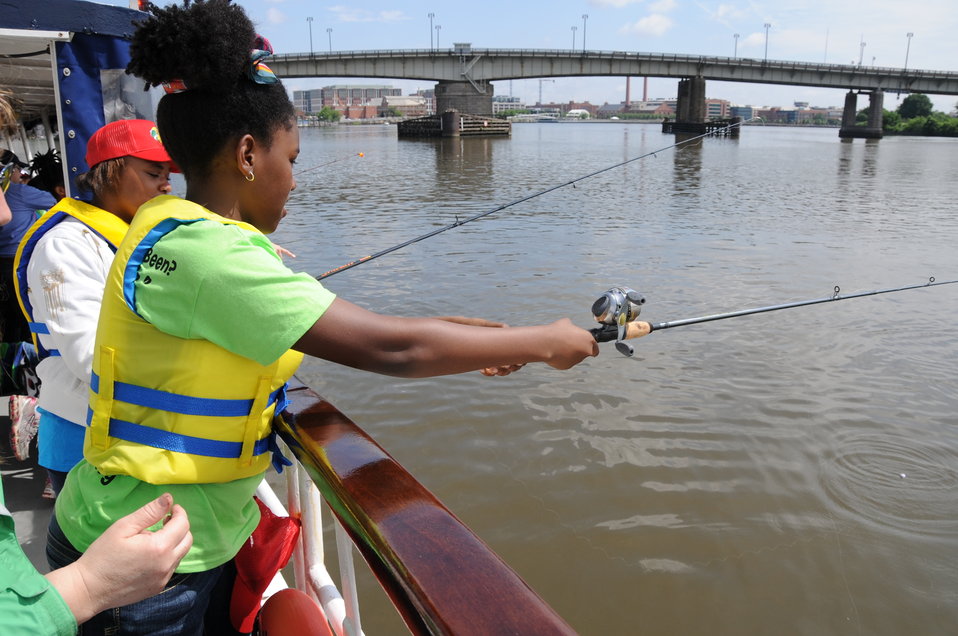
2013 National Fishing and Boating Week

Local students prepare to enjoy fishing at the annual kick-off of National Fishing and Boating Week on the Anacostia River in Washington D.C.